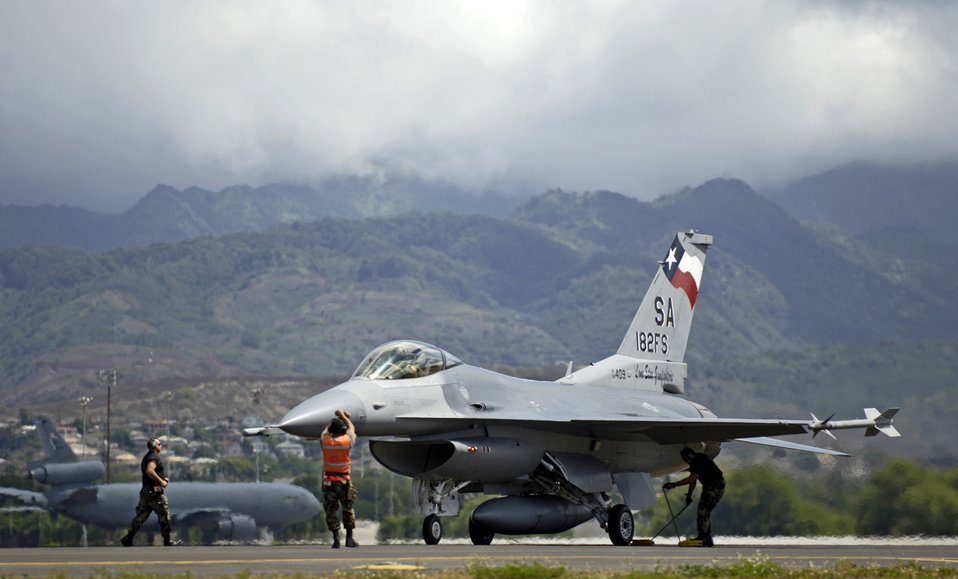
Eagles, Falcons face off in air exercise

Maintenance crew members recover their F-16 Fighting Falcon after it returns to Hickam Air Force Base, Hawaii, from an air-to-air mission Sept. 8 during Exercise Sentry Aloha. The maintenance crew are from the Texas Air National Guard's 149th Fighter Wing.